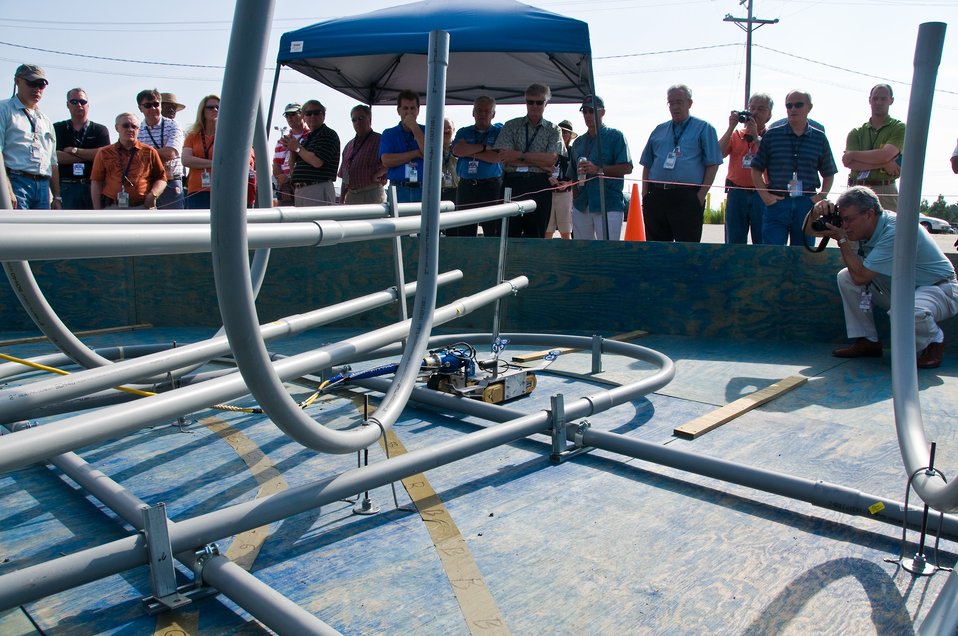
Tizzy - motorized robotic crawler

A throng of onlookers, including a film crew, photographers and other admirers, watched as “Tizzy” debuted at the Savannah River Site (SRS) while readying for its mission of nuclear waste removal.